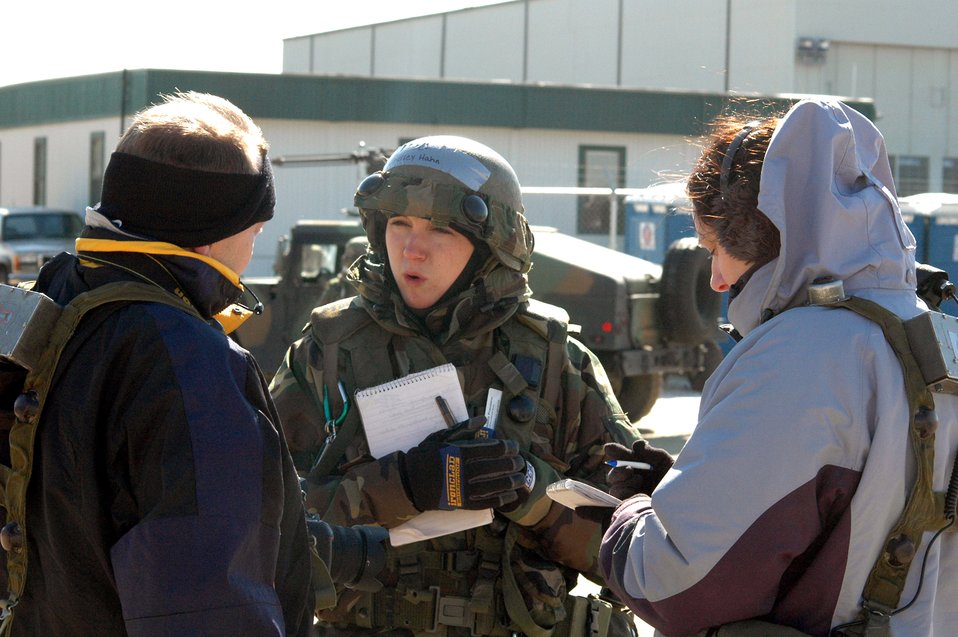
Eagle Flag role players: Airmen helping Airmen

1st Lt. Lindsay Hahn talks with